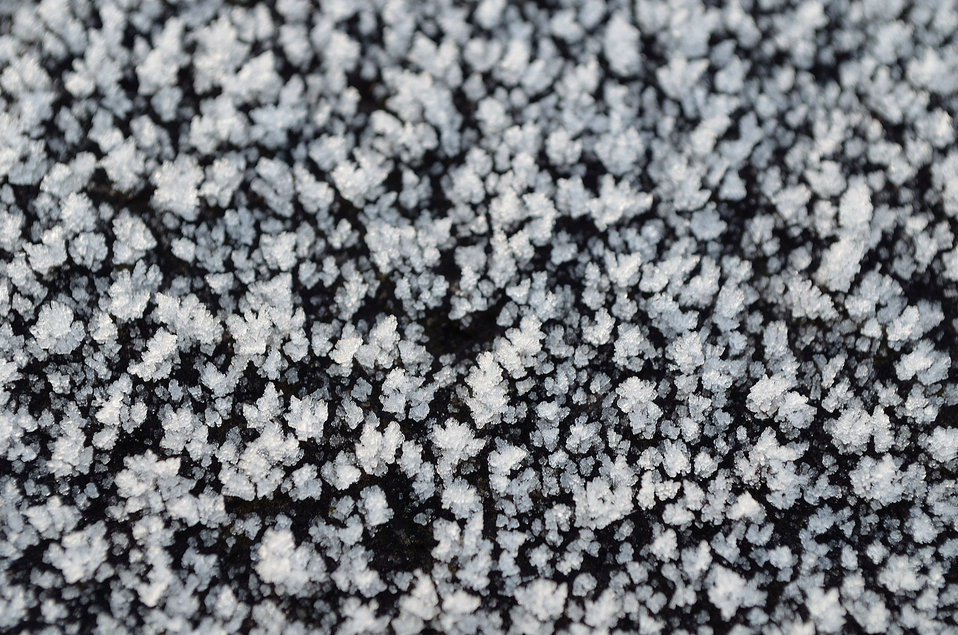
Winter hoarfrost.